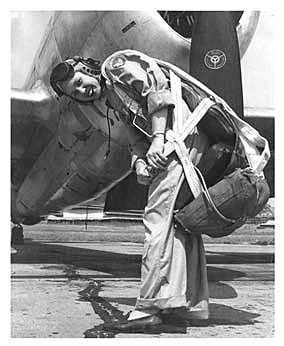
WASP recalls her World War II experiences

Deanie Parish as a WASP on the flightline at Tyndall Air Force Base, Fla., in the early 1940s.